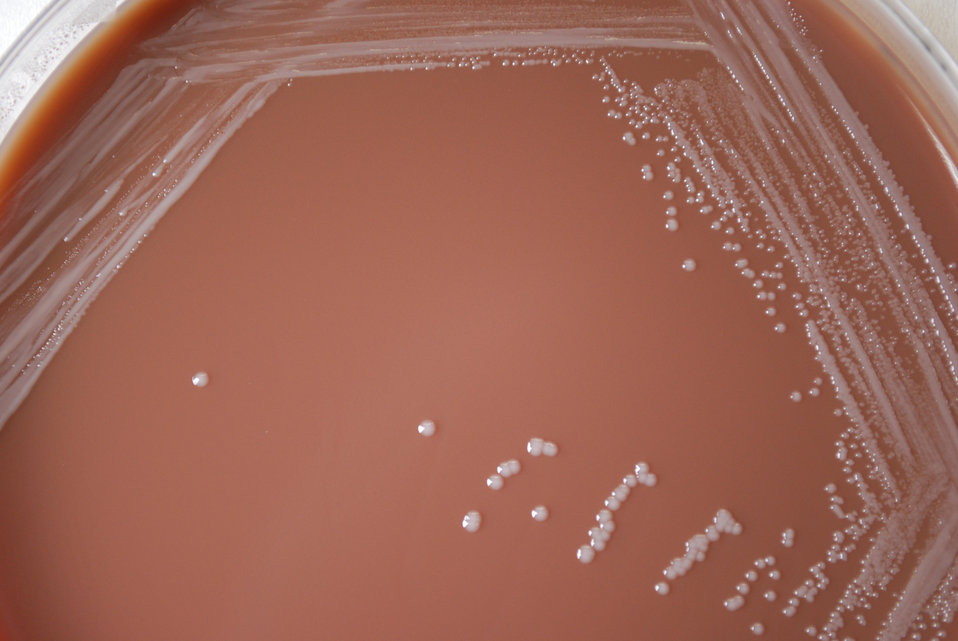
A closer view of PHIL 12286, this photograph depicts the colonial morphology displayed by Gram-negative Brucella abortus bacteria, which was grown on a medium of chocolate agar, for a 72 hour time period, at a temperature of 37�C. B. abortus bacteria are known to cause the disease brucellosis.